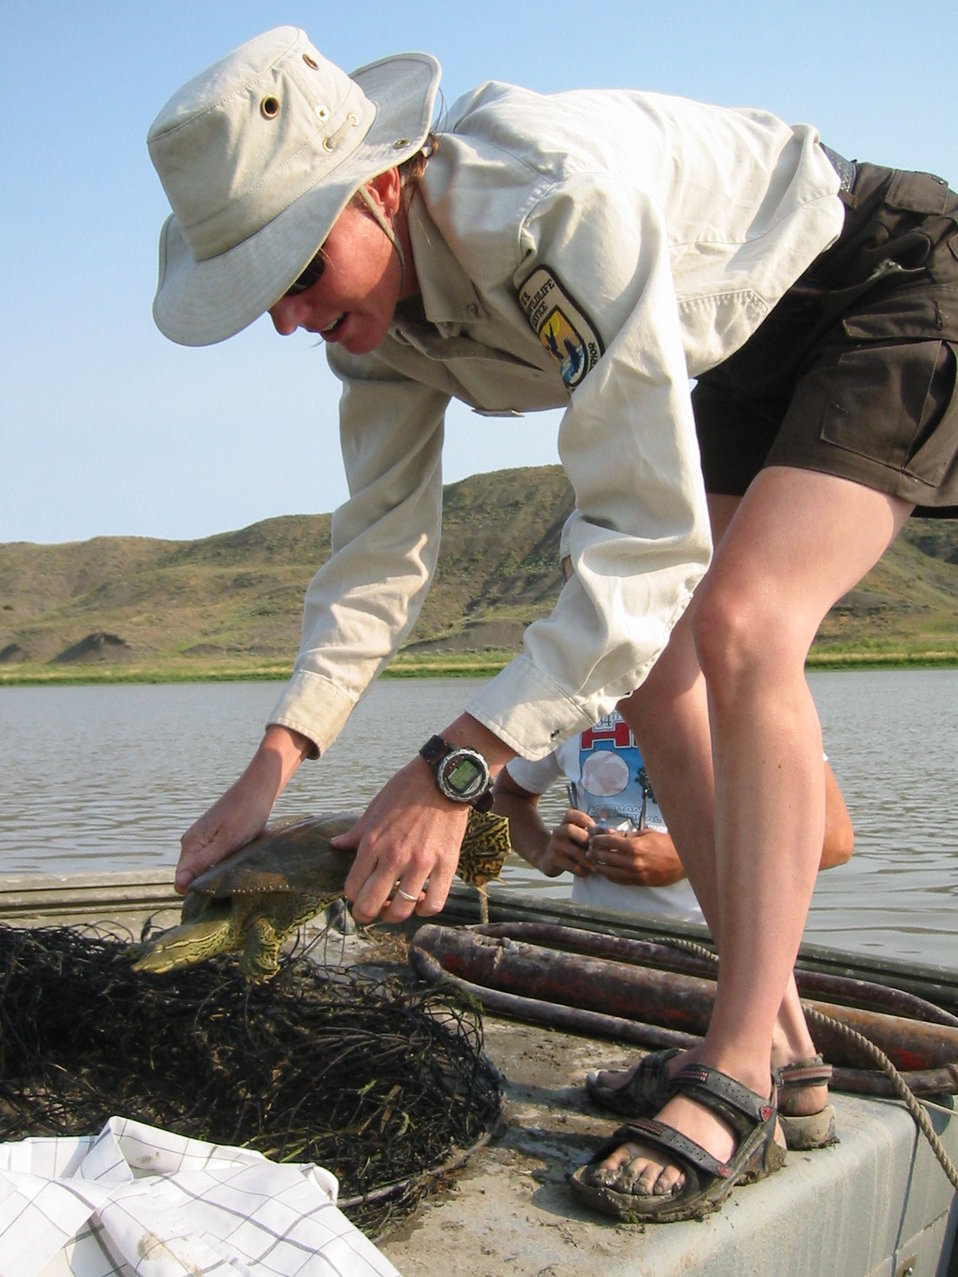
Turtle Monitoring

Jo Ann Dullum, USFWS biologist, assists with a spiny softshell turtle survey on the Missouri River.